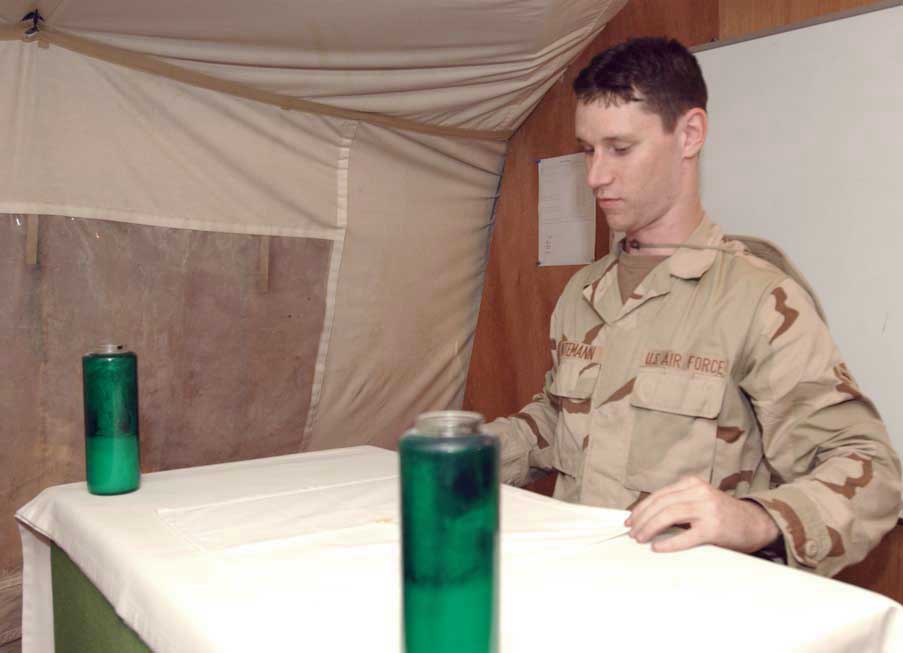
Assisting the chaplain

SOUTHWEST ASIA -- Airman Kevin Intemann, a chaplain assistant, sets up for a religious service. Chaplain assistants take care of office functions and the logistical needs of the chapel so chaplains can concentrate on people in a deployed environment. Airman Intemann is assigned to the 379th Air Expeditionary Wing.